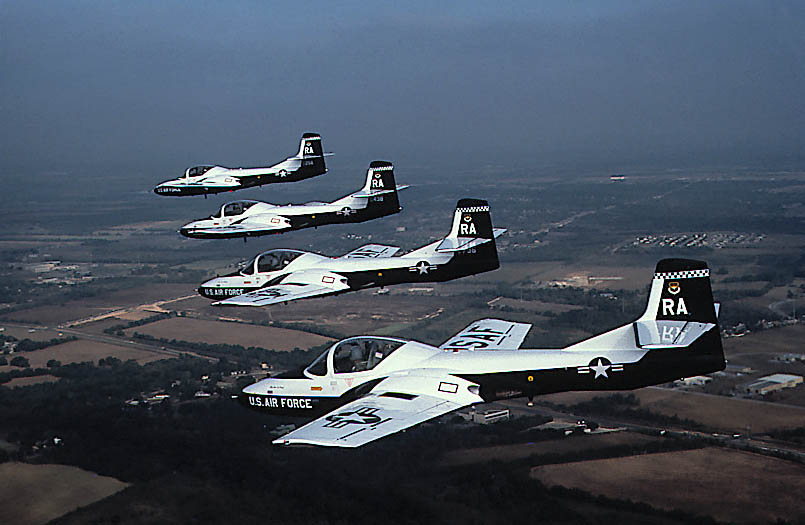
Flock of tweeties

FILE PHOTO -- A formation of four T-37s. The T-37 Tweet is a twin-engine jet used for training undergraduate pilots, undergraduate navigator and tactical navigator students in fundamentals of aircraft handling, and instrument, formation and night flying. The twin engines and flying characteristics of the T-37 give student pilots the feel for handling the larger, faster T-38 Talon or T-1A Jayhawk later in the undergraduate pilot training course. The instructor and student sit side by side for more effective training. The cockpit has dual controls, ejection seats and a clamshell-type canopy that can be jettisoned.